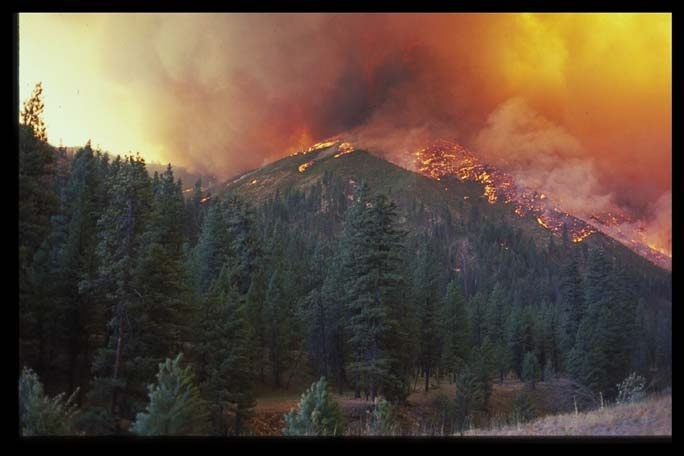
Wildland fire